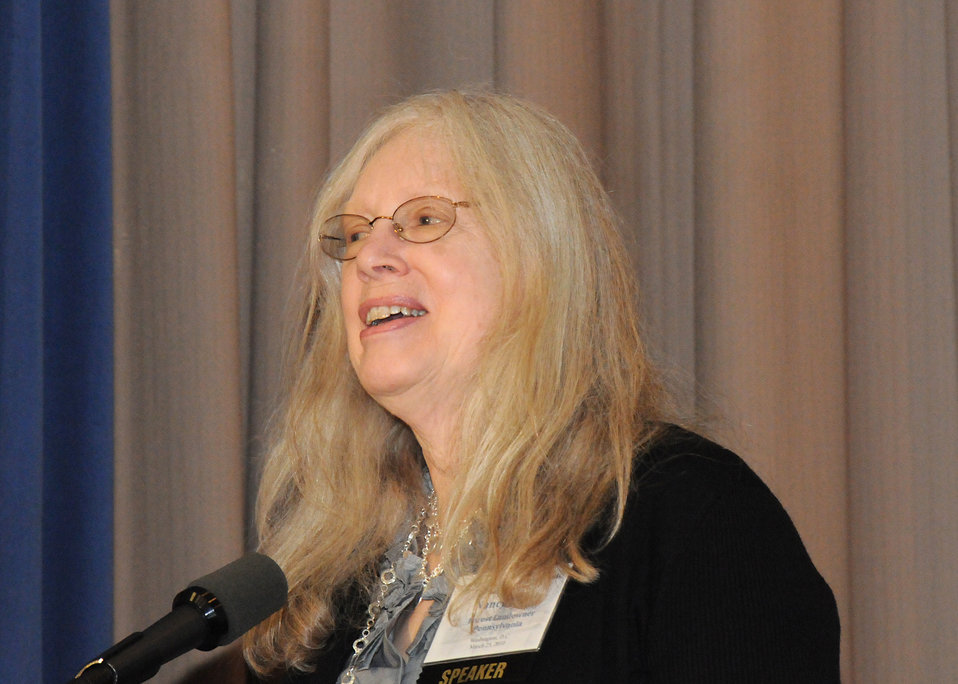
Nancy Baker and her husband steward 163 acres of hardwood and hemlock forest in Pennsylvania and she mentors other women forest landowners. Mrs. Baker was one of four women sitting on the panel at the Women and Working Lands: Past, Present, Future conference held in the Jefferson Auditorium at the Department of Agriculture in Washington, D.C., on Thursday, Mar. 25, 2010. USDA photo 10di1283-105